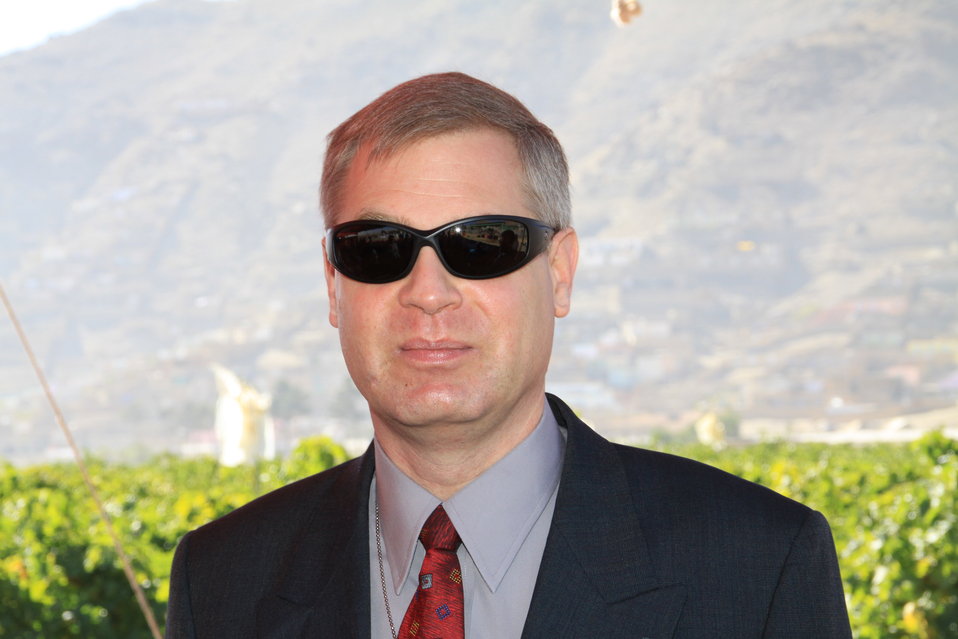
AVIPA Plus Wheat Seed Distribution 101005

US Ambassador Karl Eikenberry and USAID Acting Mission Director Kevin Brownawell joined the Minister of Agriculture, Irrigation and Livestock, H.E. Minister Mohammed Rahimi in signing a Memorandum of Understanding and distributing vouchers to area farmers for wheat and fertilizer.